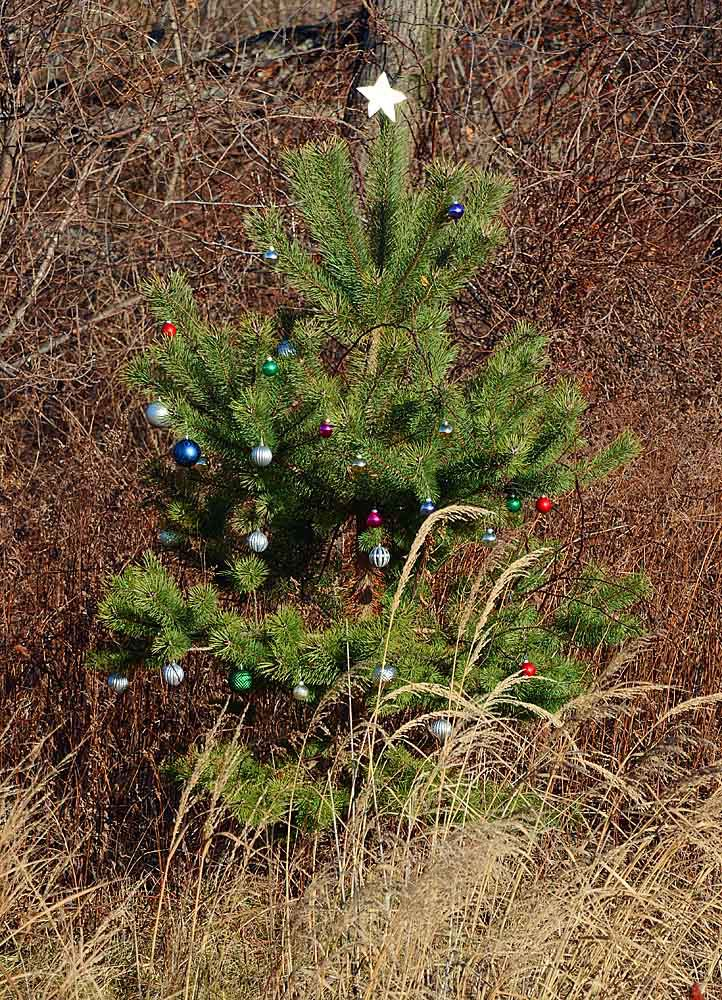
living Christmas tree

Parker River National Wildlife Refuge, MA